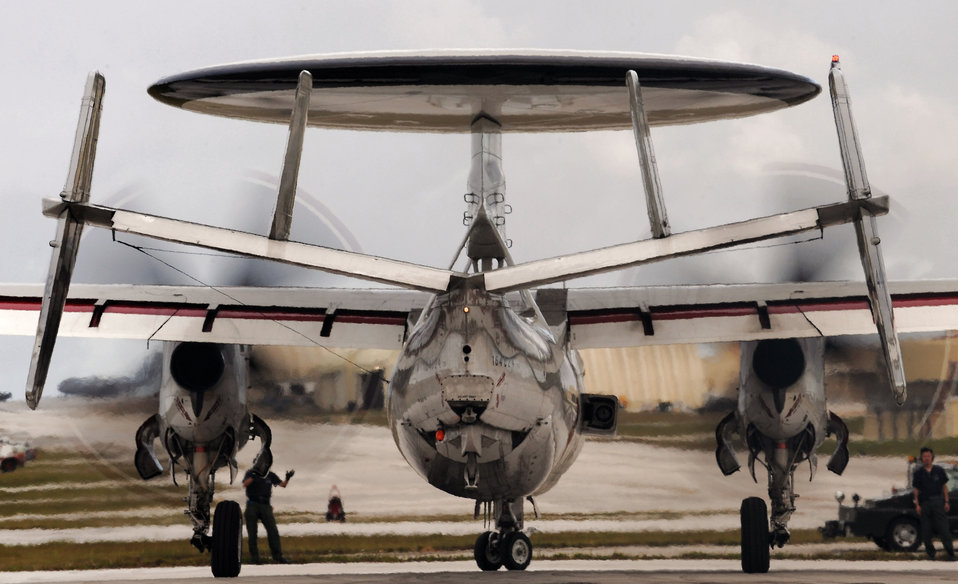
Cope North 09-1

Japanese E-2C Hawkeye maintainers from the 601st Squadron at Misawa Air Base, Japan, guide an E-2C Hawkeye into a parking spot Feb. 5 at Andersen Air Force Base, Guam, during Cope North 09-1 after a local-area mission. Japan Air Self Defense Force aircraft are joining forward-deployed U.S. Air Force and Navy aircraft to participate in this year's Cope North exercise Feb. 2 through 13, with a focus on interoperability.